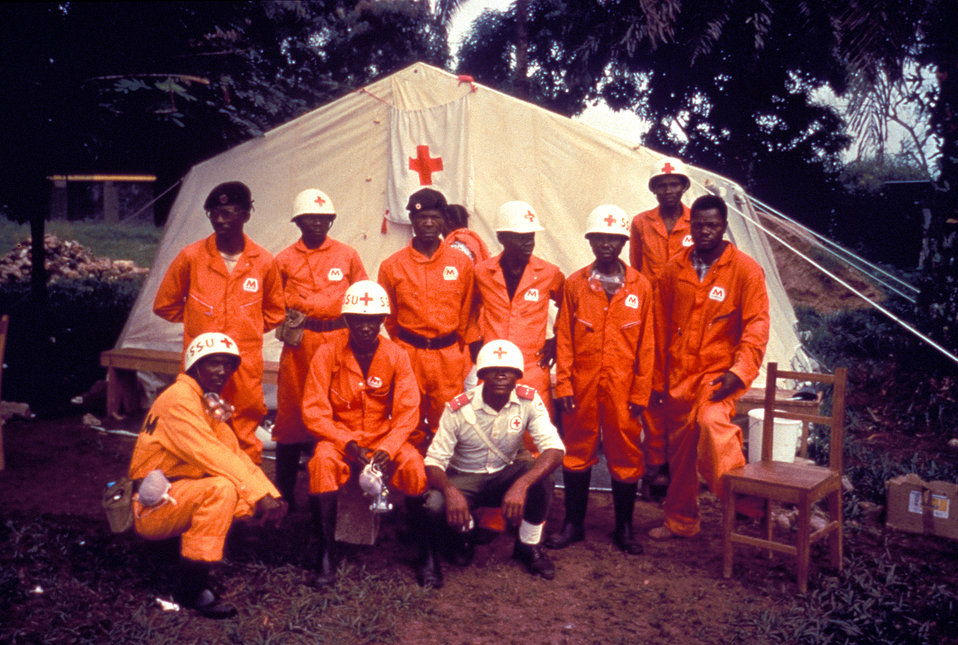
This was the local Red Cross team in Kikwit, Zaire, during the Ebola VHF outbreak in 1995.